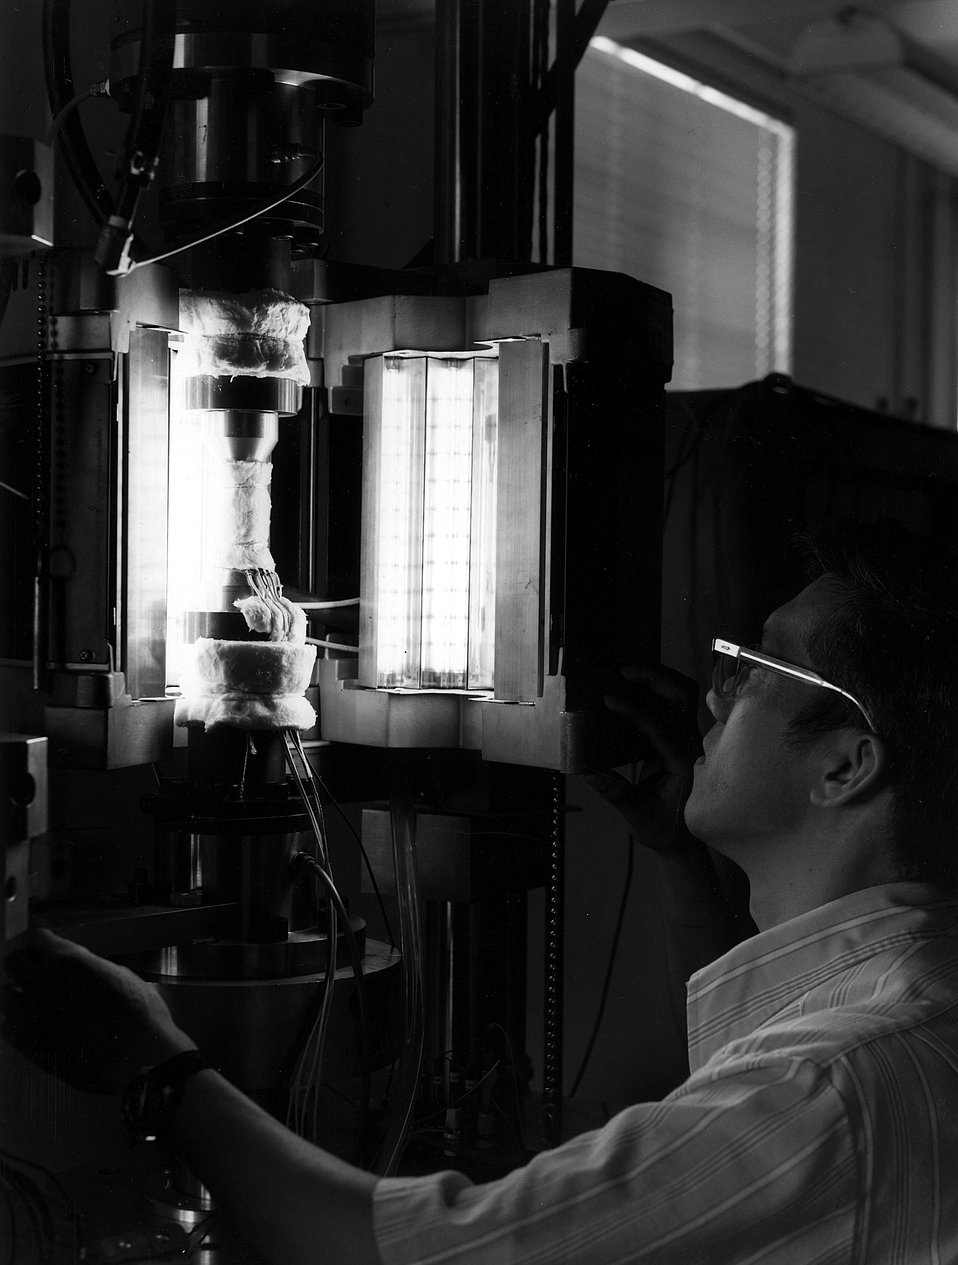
A tubular specimen of type-304 stainless steel is heated to 1,100 degrees F and subjected to pulling, twisting, and internal stresses during tests at Oak Ridge National Laboratory.